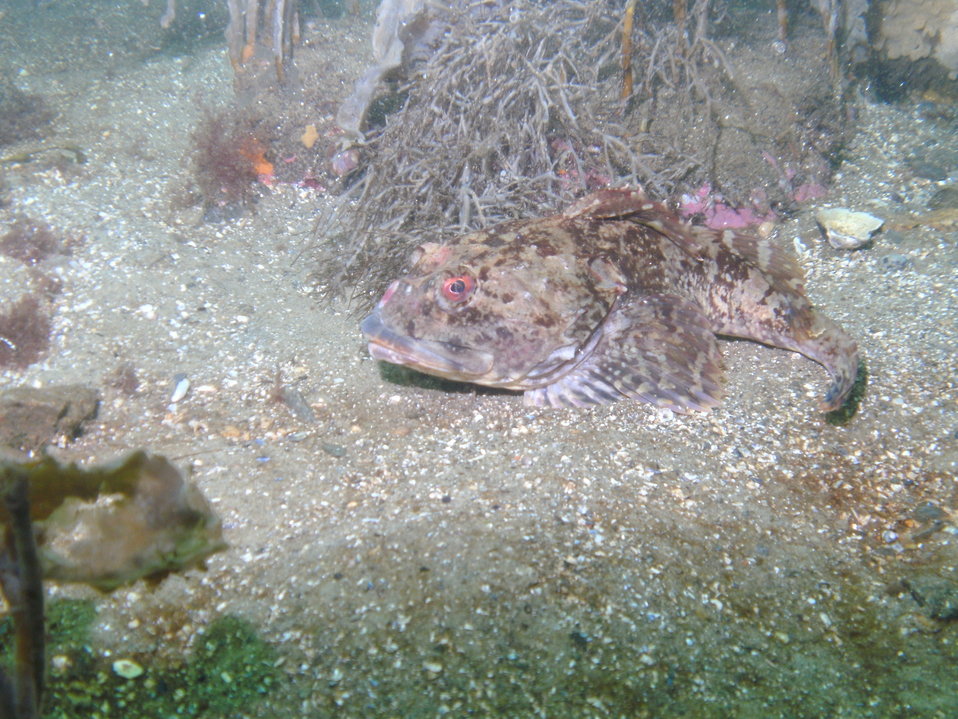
Myoxocephalus Scorpius, more commonly known as the shorthorn sculpin! Folly Cove, Massachusetts

This guy was photographed in about 20 feet in Folly Cove, Gloucester, Massachusetts also during a survey to monitor for invasive species.

EPA studies the ecological effects of the spread of invasive (non-native) species to our oceans. Due to the large amount of boat traffic in our coastal waters, our near shore cove areas are at particular risk. The New England dive team takes inventory and monitors several locations for native and non-native species to track changes.